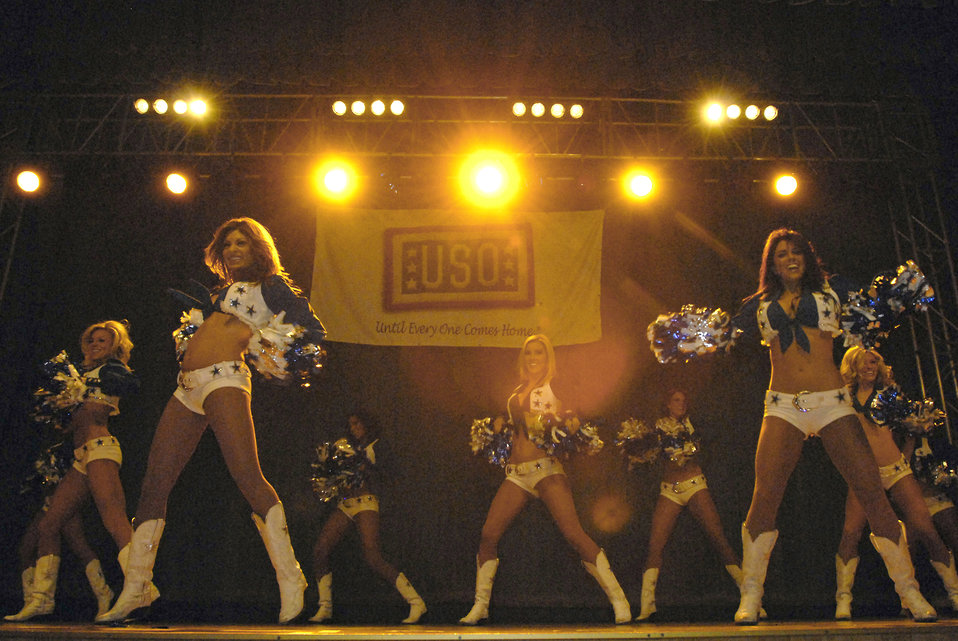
Dallas Cowboys cheerleaders perform Dec. 29, 2010, during a visit to Osan Air Base, South Korea.